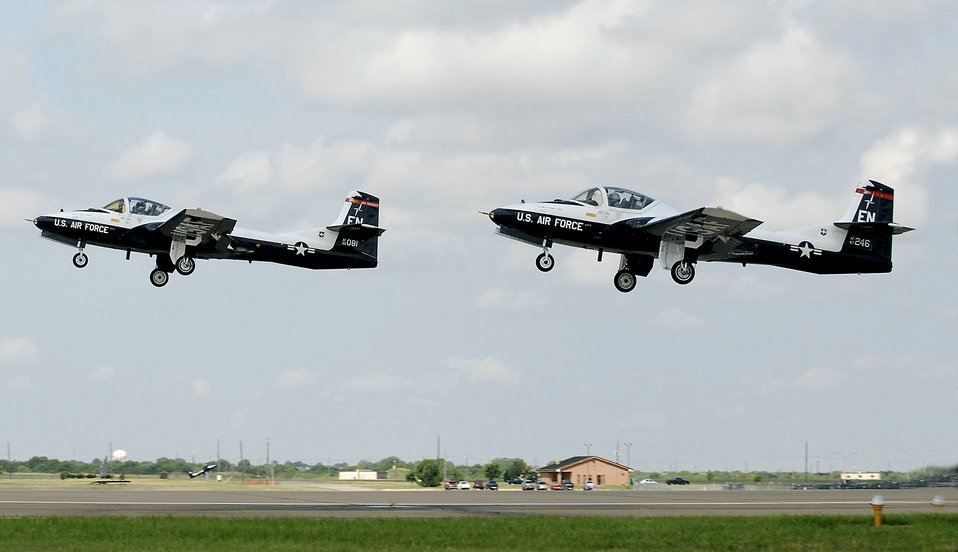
T-37s retire

The last seven T-37 Tweets in the Air Force inventory, including the two pictured here, took off one final time July 31 as part of the aircraft's retirement ceremony. Four of the aircraft will make the journey to the Aerospace Maintenance and Regeneration Group at Davis-Monthan Air Force Base, Ariz., while the final three will go to the Utah Test and Training Range in Utah.